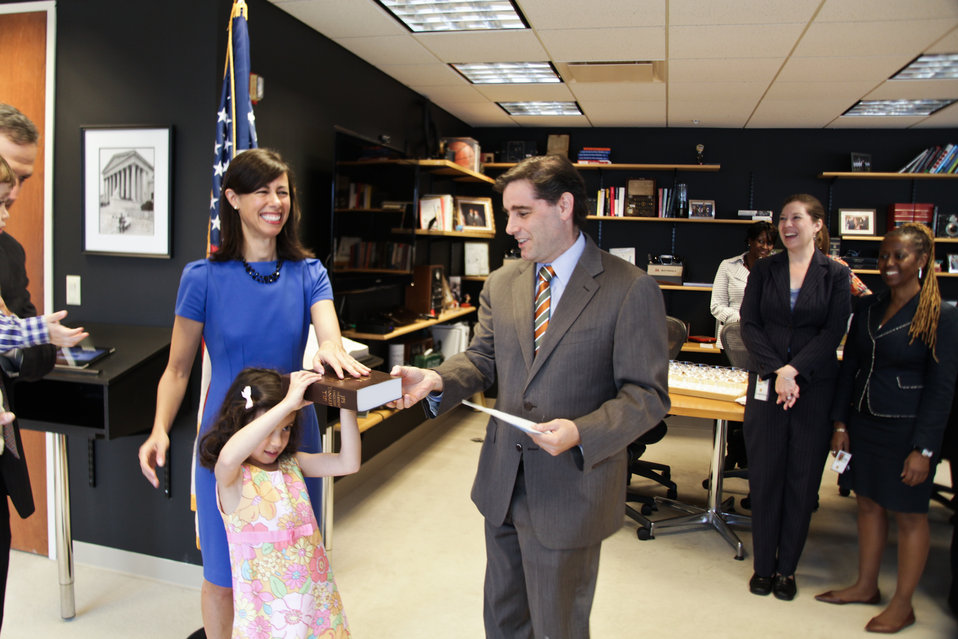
Commissioner Jessica Rosenworcel and Daughter with the FCC Chairman Genachowski

FCC Chairman Genachowski with Commissioner Jessica Rosenworcel and daughter holding a bible at the FCC headquarters in Washington, DC.

May 14, 2012.